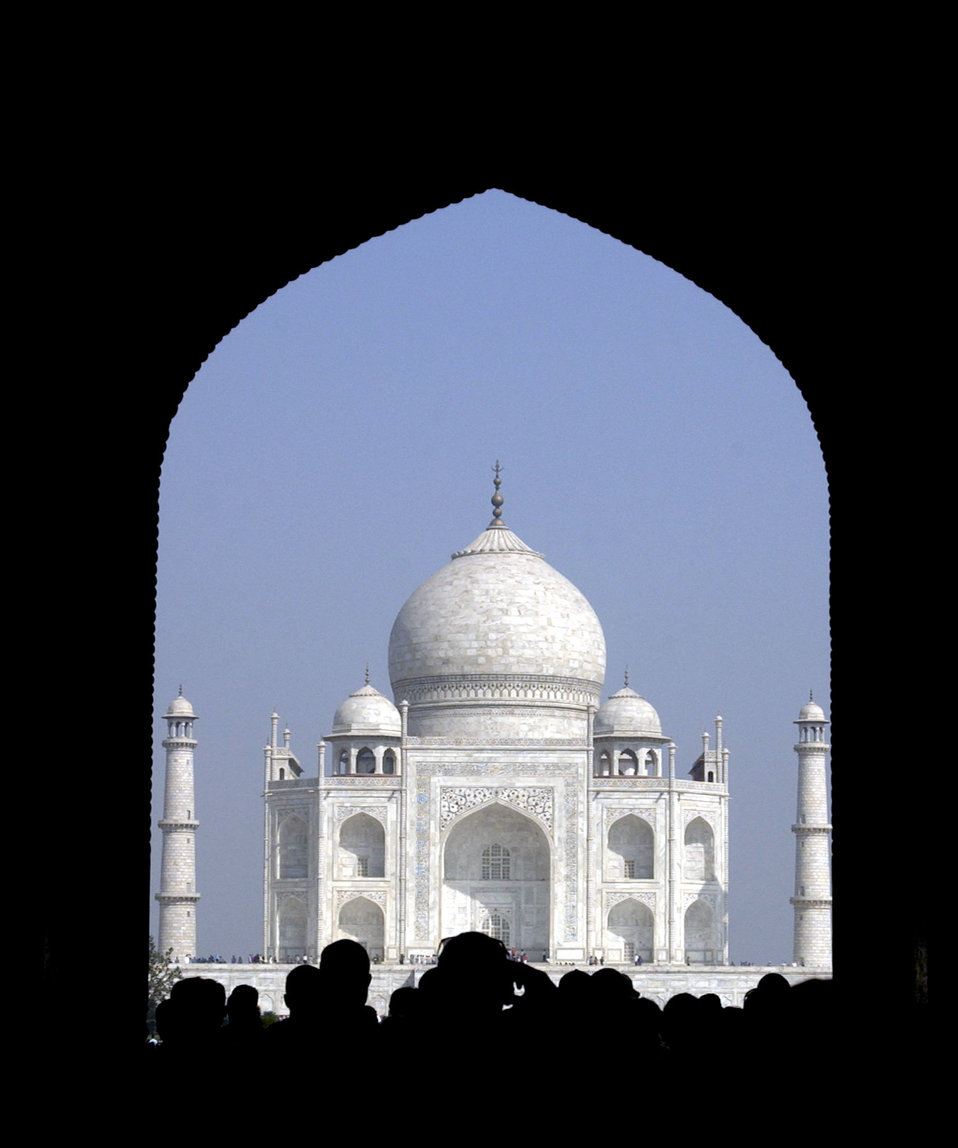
Cultural awareness

AGRA, India -- Seeing the Taj Mahal in all its glory, U.S. airmen enter through one of the monument's gates Feb. 21, during a break from Cope India '04. About 130 airmen from Elmendorf Air Force Base, Alaska, are here for the bilateral dissimilar air combat exercise with the Indian air force.